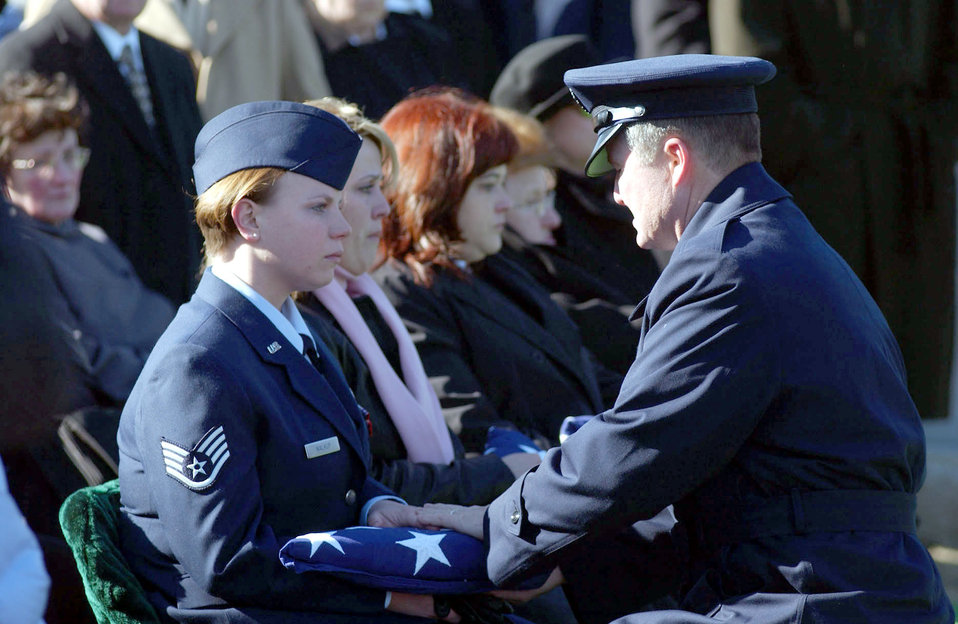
Servicemembers laid to rest

ARLINGTON, Va. -- Chief Master Sgt. of the Air Force Gerald R. Murray presents a flag to Staff Sgt. Carrissa Walkup during a full-honor mass funeral at Arlington National Cemetery. Her husband, Staff Sgt. Thomas A. Walkup Jr., and four other military members were killed when their MH-53M Pave Low helicopter crashed Nov. 23 in Afghanistan.